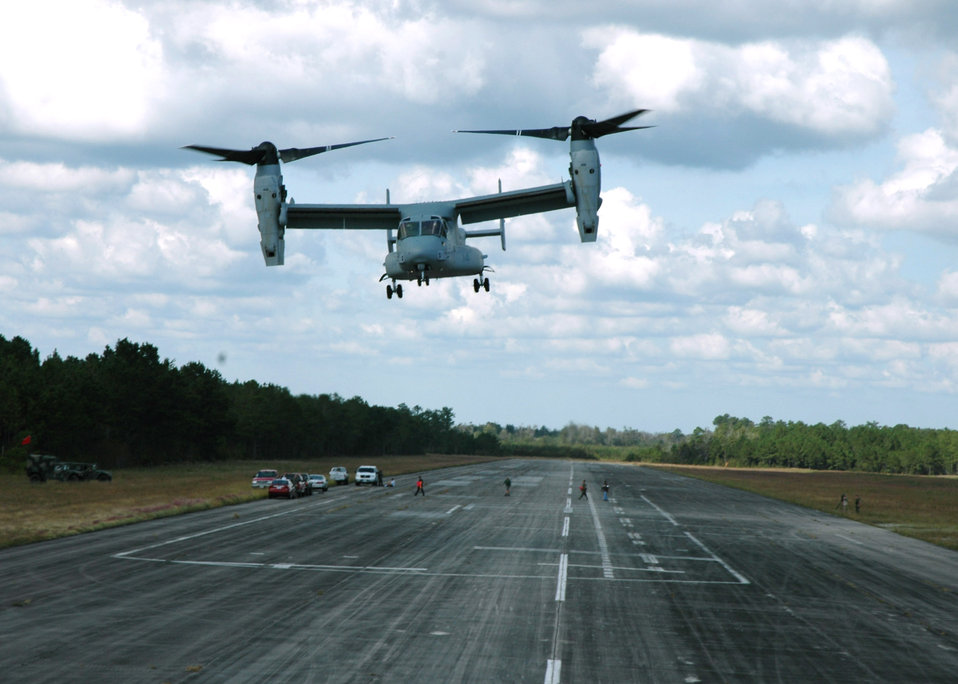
Roche, Jumper 'wear test' Osprey

MARINE CORPS AIR STATION NEW RIVER, N.C. -- A Marine Corps MV-22 Osprey lifts off a runway here. The MV-22 is a tilt-rotor aircraft. When turned toward the sky, the two wing-mounted rotors on the craft allow for a vertical takeoff like a helicopter. When turned forward, the craft flies as an airplane. Air Force officials plan to purchase as many as 50 CV-22 aircraft.